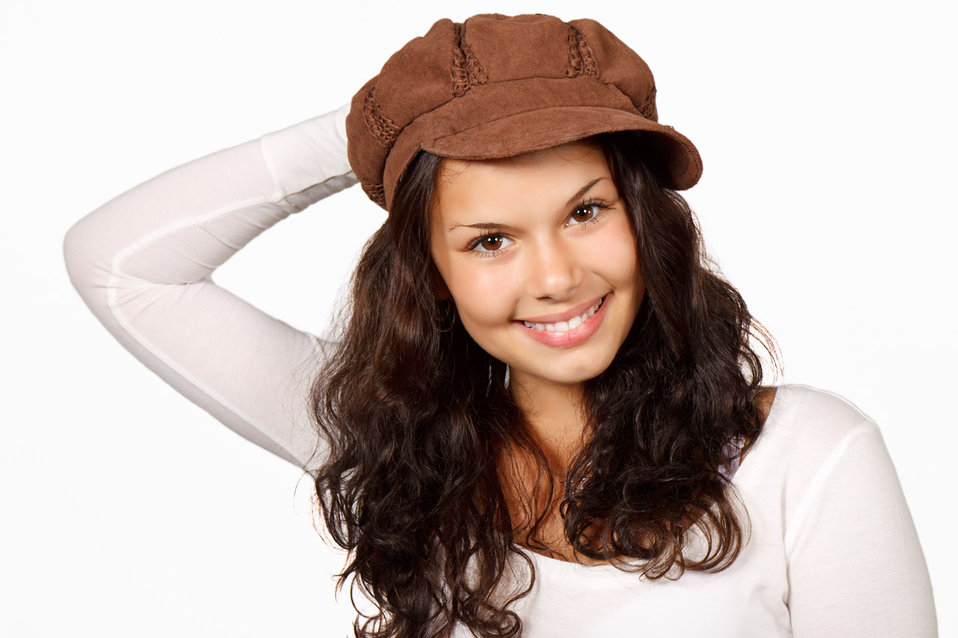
Model in a hat

Young smiling woman wearing a brown hat isolated on white background.